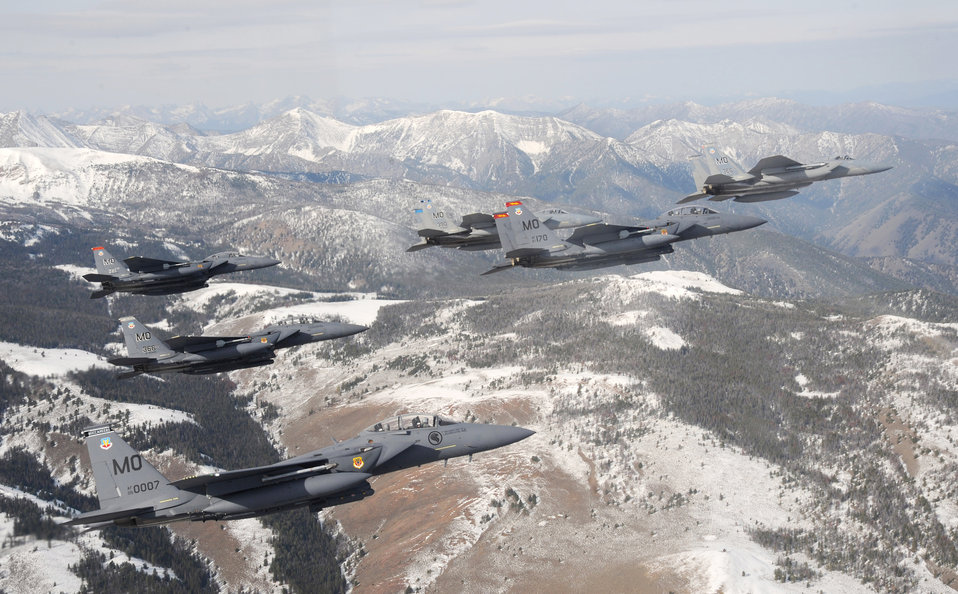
Flying over the Sawtooth Mountains

A six-ship formation of F-15C Eagle and F-15E Strike Eagles from the 366th Fighter Wing at Mountain Home Air Force Base, Idaho, fly over the nearby Sawtooth Mountains Oct. 13, 2009.